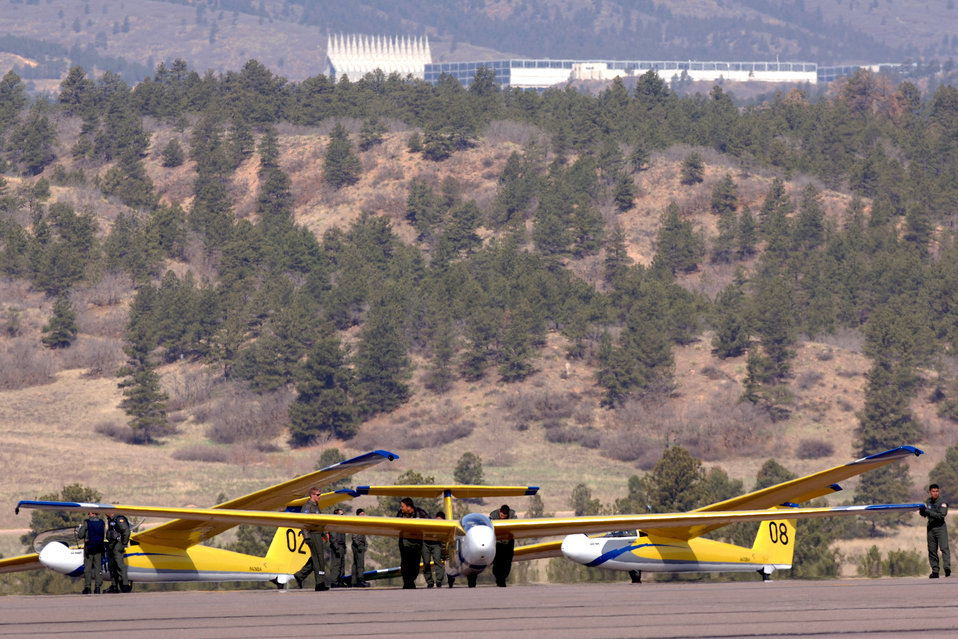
Gliders help future Air Force leaders soar

TG-10B gliders are sheltered in a hangar on the flightline at the U.S. Air Force Academy, Colo. The TG-10B (L-23 Super Blanik), a conventional, two-place tandem, basic training sailplane, is used to introduce Air Force cadets to flight through the Soar-For-All program. Maneuvers flown in the TG-10B include aerotow, stall recoveries, slow flight, steep turns and rectangular traffic patterns.